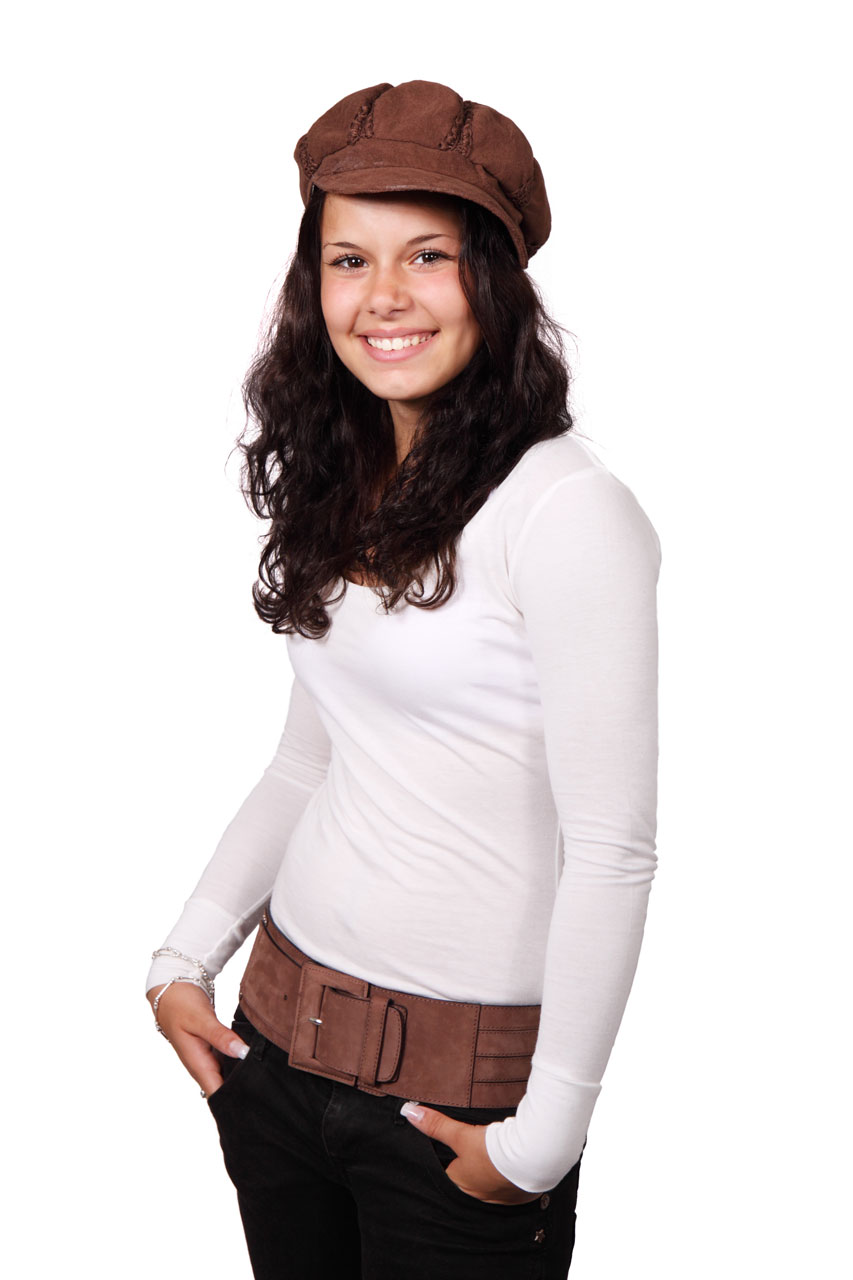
Cute woman posing

Young cute woman posing wearing a hat isolated on white background.